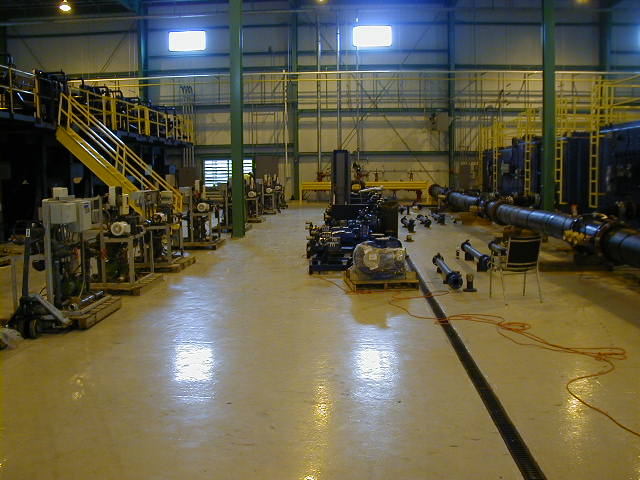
Summer 2005, a view inside the de-watering plant

To the left, large accordion-like filter presses remove and pump water from the silt and sediment for filtration and release back to the harbor.